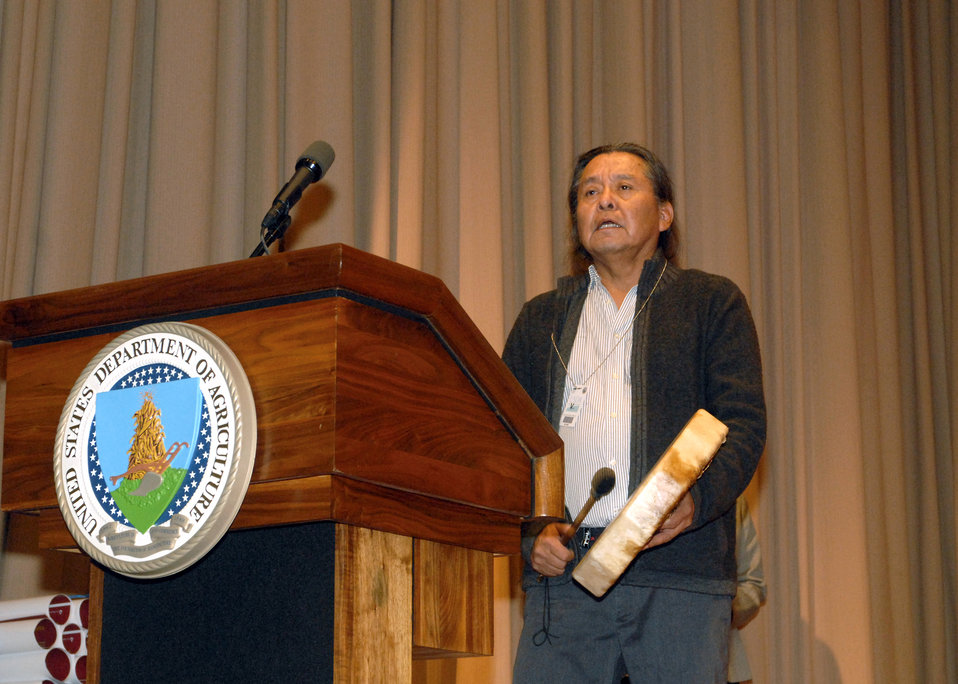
National Air and Space Agency (NASA) Goddard Space Flight Center employee Bahe Rock gives the blessing at the U.S. Department of Agriculture’s (USDA) Native American Heritage Month Observance in the Jefferson Auditorium at the USDA South Building in Washington, D.C. on Tuesday, Nov. 20, 2012. The theme for this year’s observance is “Serving with Honor, Pride, and Devotion: Country, Land and People”.